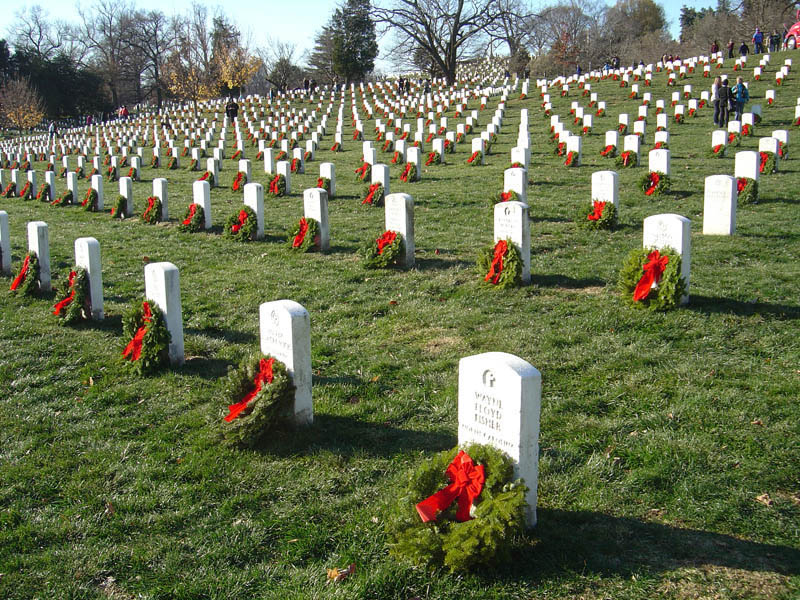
Airmen honor the fallen

Members of Detachment 5, 544th Intelligence, Surveillance and Reconnaissance Group were among 6,000 volunteers who came out to lay wreaths Dec. 23, 2009, at Arlington National Cemetery in Virginia. The event was sponsored by Wreaths Across America.